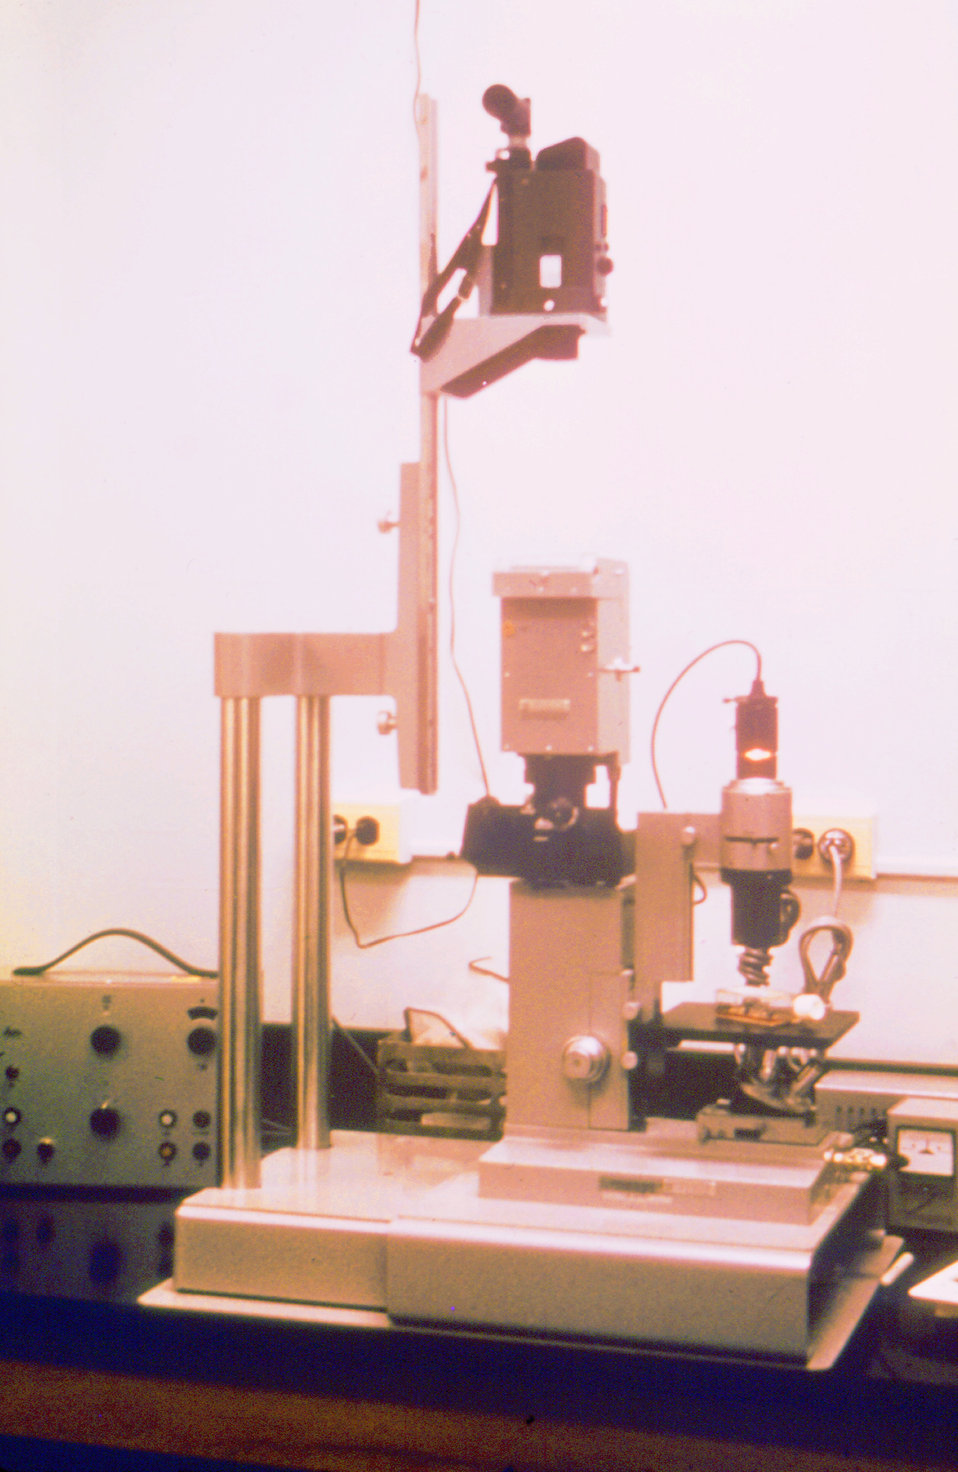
This inverted microscope was used in a CDC facility laboratory.